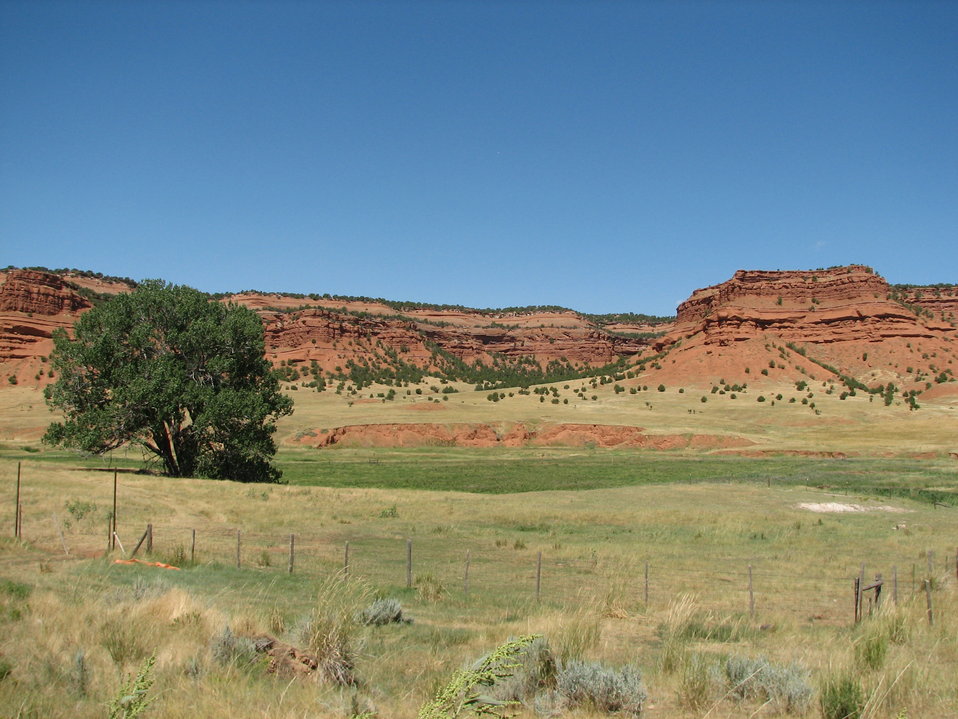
Chugwater formation south of Tensleep, Wyoming.

Credit: Pedro 'Pete' Ramirez, Jr. / USFWS